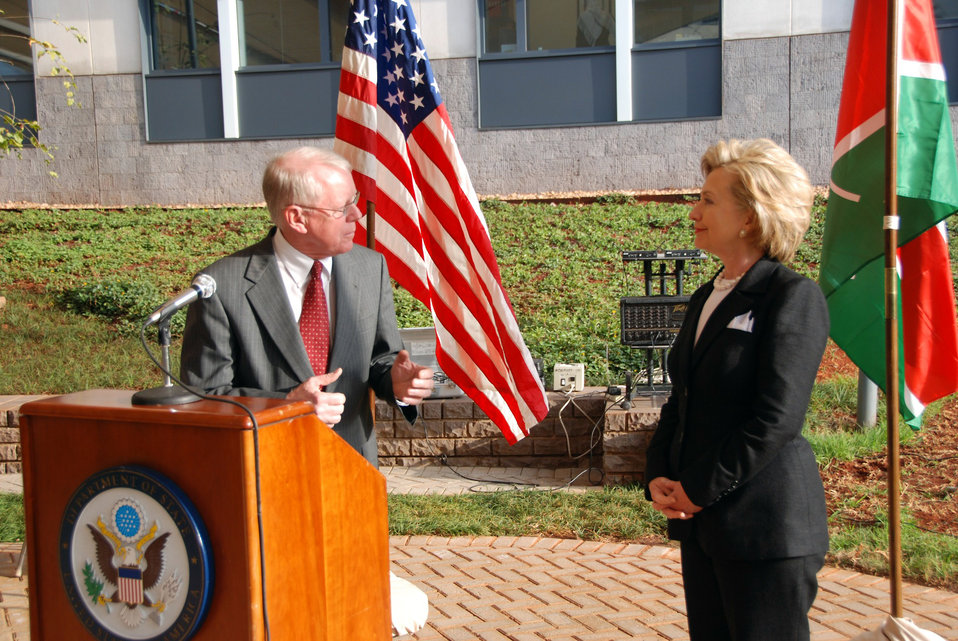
Secretary Clinton Addresses U.S. Embassy Staff in Kenya

U.S. Secretary of State Hillary Rodham Clinton addresses U.S. Embassy employees in Nairobi, Kenya August 6, 2009.